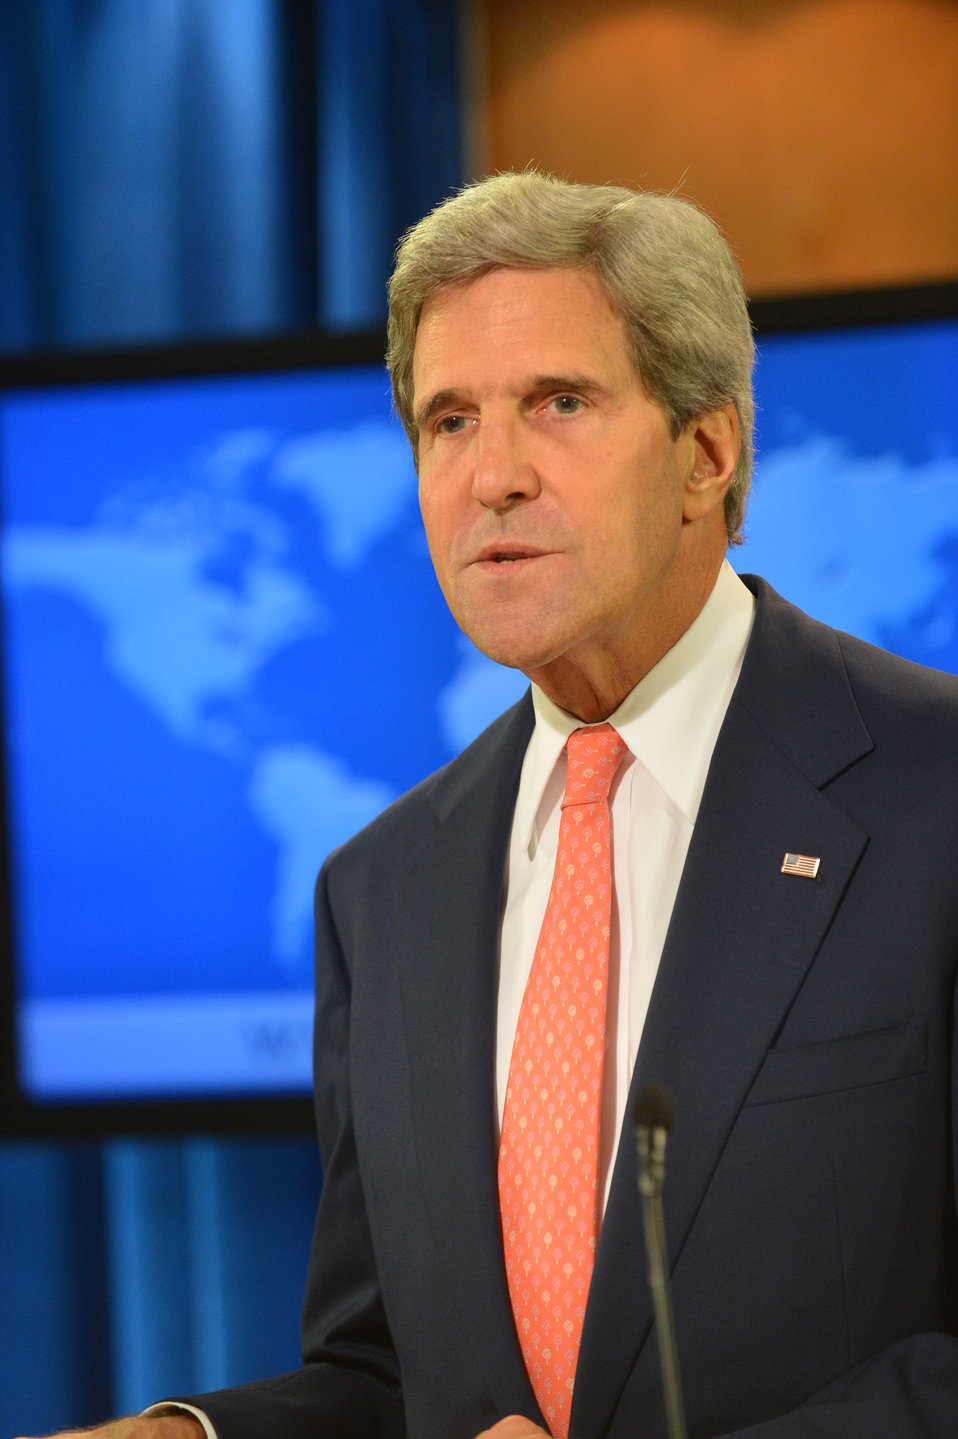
Secretary Kerry Delivers Remarks on Syria

U.S. Secretary of State John Kerry delivers remarks on Syria at the U.S. Department of State in Washington, D.C., on August 26, 2013.